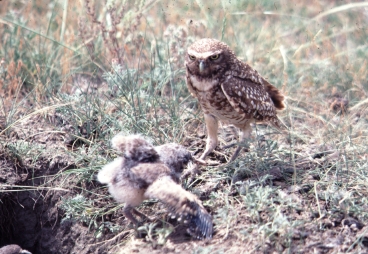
Burrowing Owl and Chick

Burrowing owls use the burrows of other animals such a prairie dogs and lay their eggs underground.